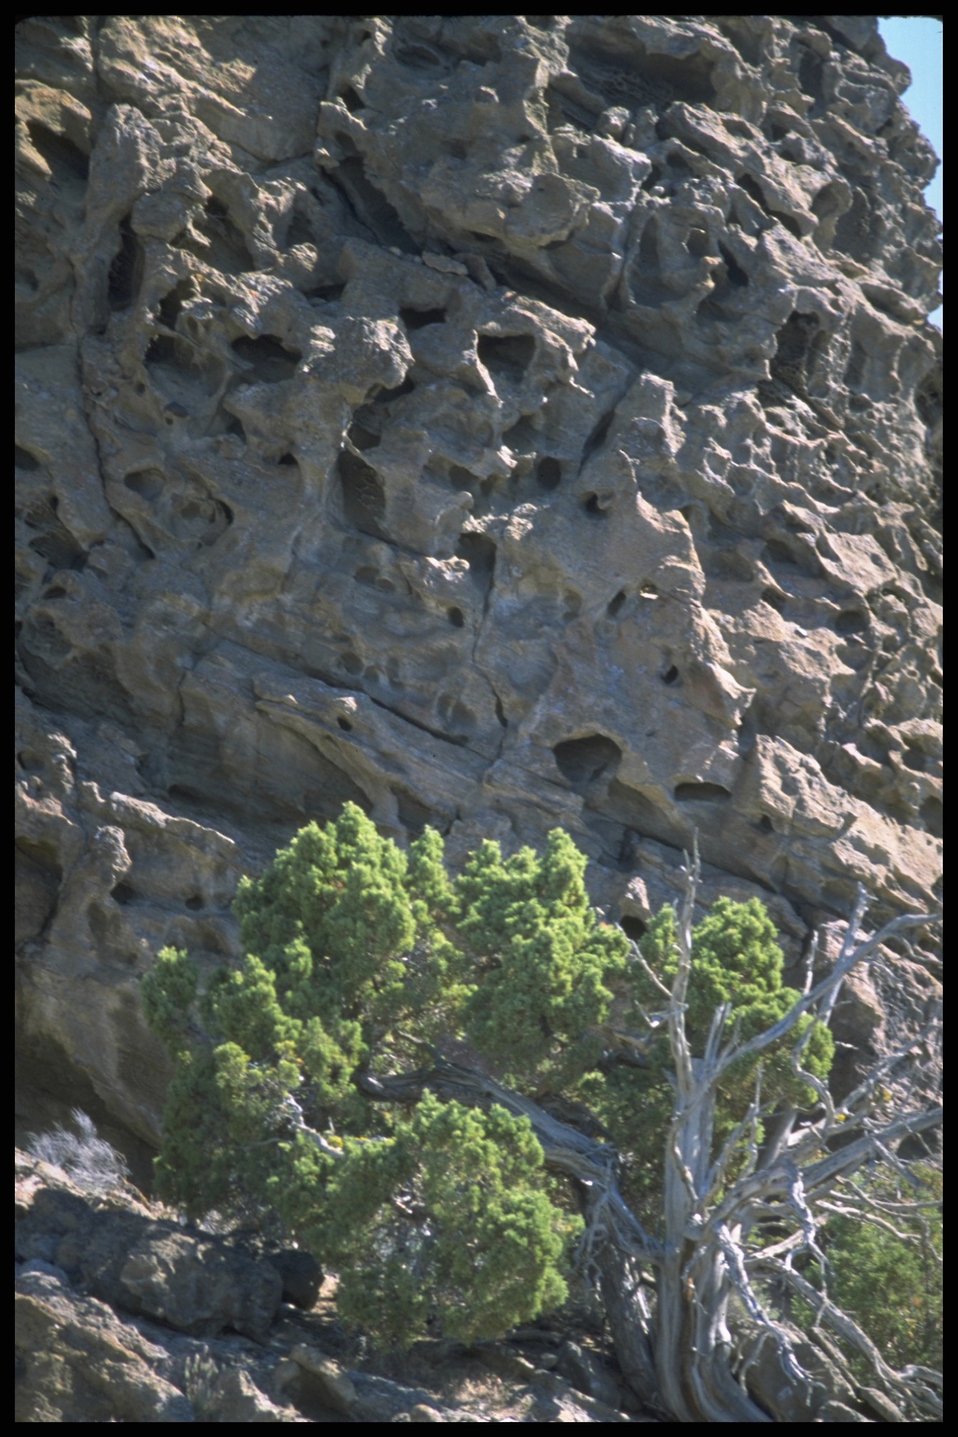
Scenic view of Sand Rock, Lost Forest. Lakeview District.